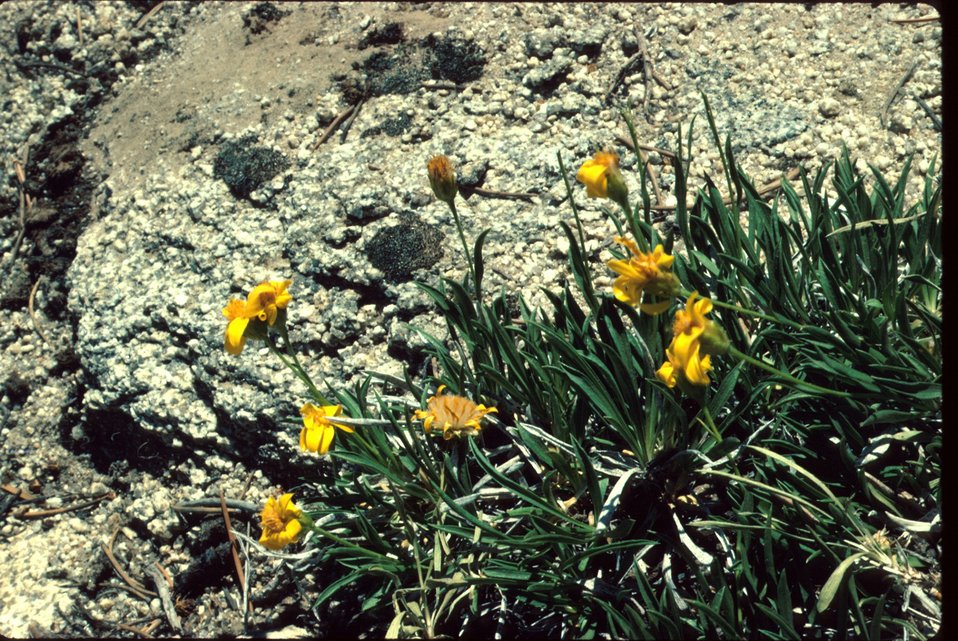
Happopappus acialis Wildflower